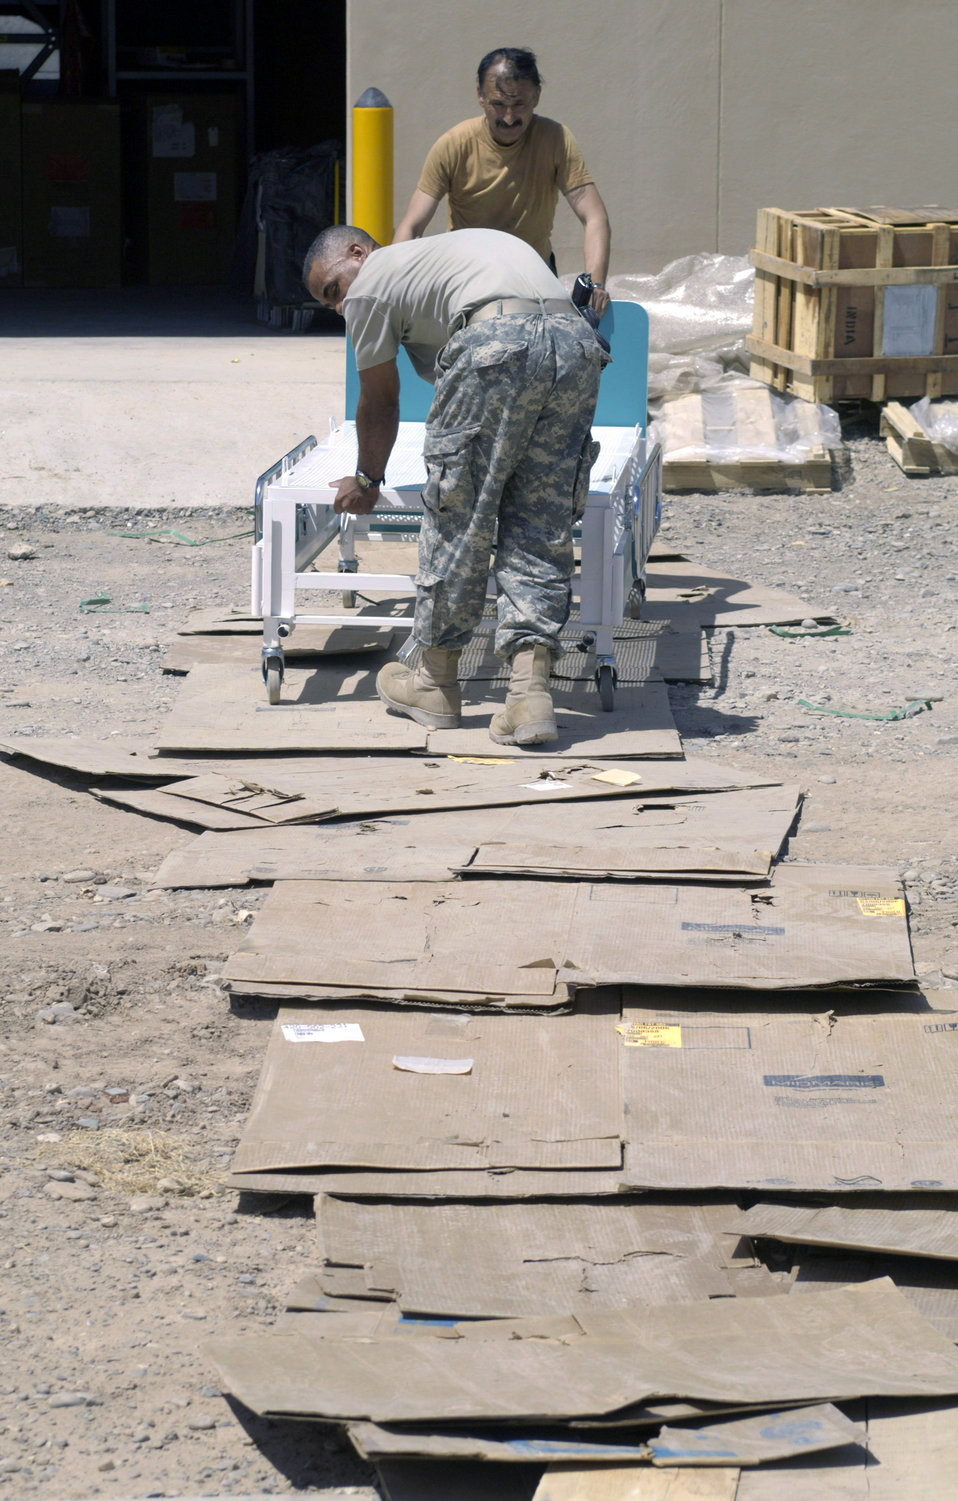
Airmen mentorship helps develop Afghan hospital

Afghan national army Maj. Abdul Ghafar (background) and Army Staff Sgt. Johnathan Moore wheel a hospital bed from a warehouse to a new $6.5 million, 50-bed ANA hospital Aug. 17 in Afghanistan. The state-of-the-art facility is located on the ANA's Hero Camp near Kandahar Airfield in southern Afghanistan. Major Ghafar is the ANA's 205th Hero Corps warehouse commander. He is also in charge of all logistical support for the 205th. Sergeant Moore is a medical logistics technician and ANA mentor deployed from Walter Reed Army Medical Center in Washington, D.C. He is assigned to the Combined Security Transition Command-Afghanistan on Camp Eggers in Kabul, Afghanistan.